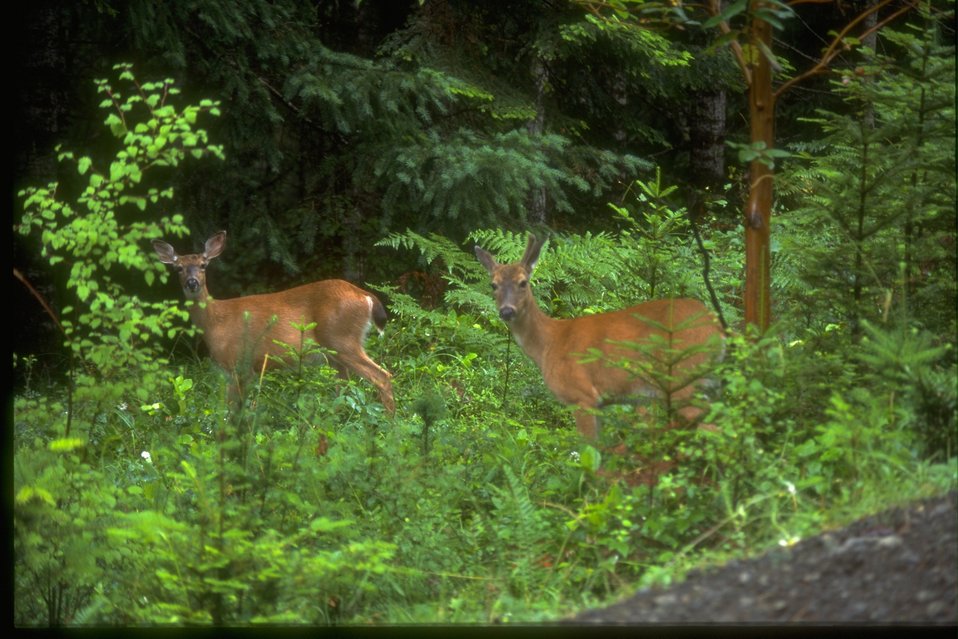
Two Deer just off to the side of the road are part of the Watchable Wildlife project.